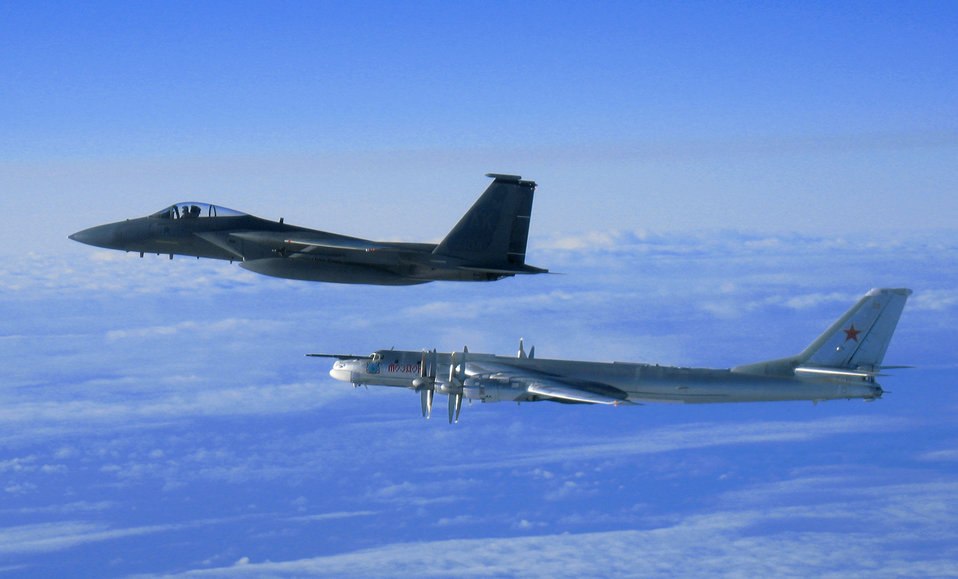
Tracking the Bear

An F-15 Eagle from the 12th Fighter Squadron at Elmendorf Air Force Base flies next to a Russian Tu-95 Bear Bomber Sept. 28 during a Russian exercise that brought the Bear near the west coast of Alaska. The Eagle took off as part of North American Aerospace Defense Command's reaction to this training opportunity provided by the Russian 137th Air Army.